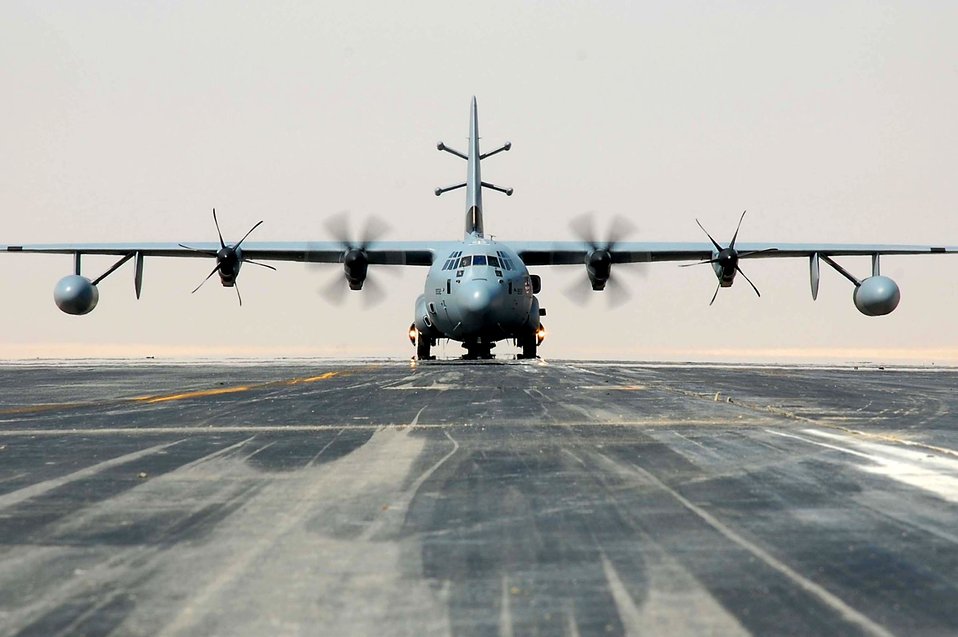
Airpower summary

An EC-130J Commando Solo aircraft taxis down the runway from a base in Southwest Asia. The EC-130J conducts information operations and civil affairs broadcasts in AM, FM, HF, TV and military communications bands in support of Operation Enduring Freedom and Operation Iraqi Freedom.